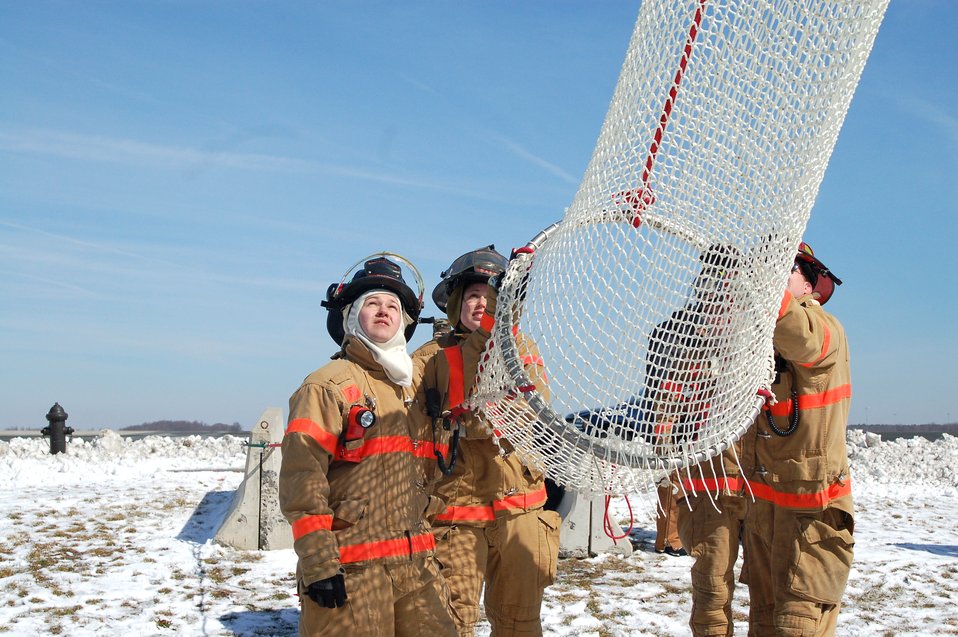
Straight 'chute' to safety

Airman Kyle Herron (from left), Airman 1st Class Darliska Blessing, Jeffrey McCombs and Tom Peers wait to assist a Dover Air Force Base, Del., tower controller descending in a Baker Life Chute from the control tower March 8 during a fire drill. The life chute was installed on the tower's catwalk and is designed to allow controllers a safe descent to the ground level in the event of an emergency. The firefighters are from the 436th Civil Engineer Squadron.